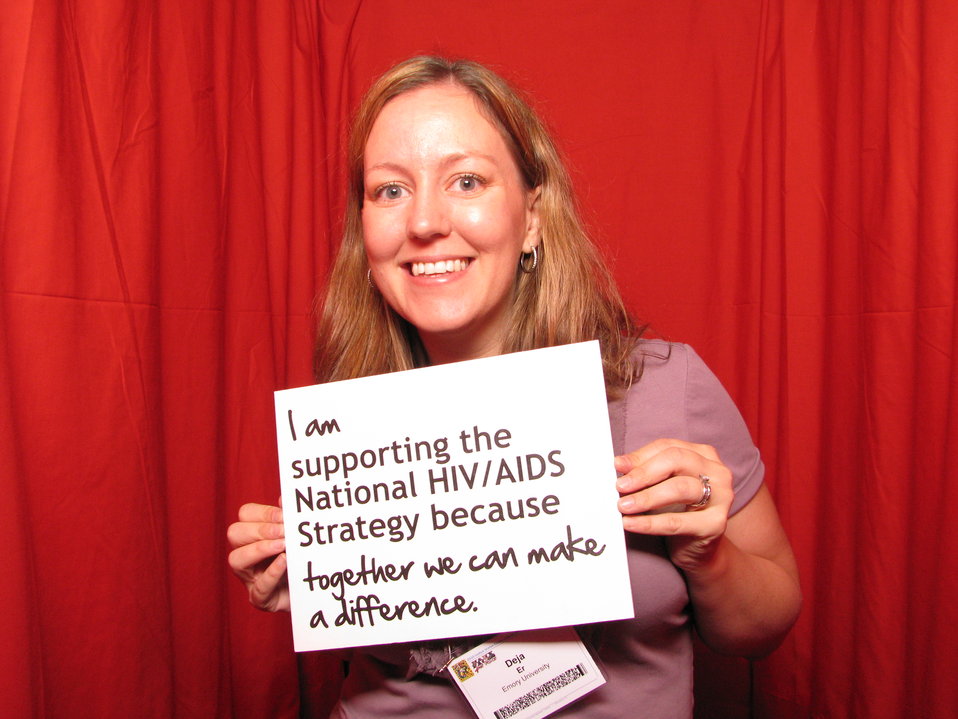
I am supporting the National HIV/AIDS Strategy because together we can make a difference.

From the AIDS.gov photo booth at the U.S. Conference on AIDS, September 2010 (Orlando, FL).